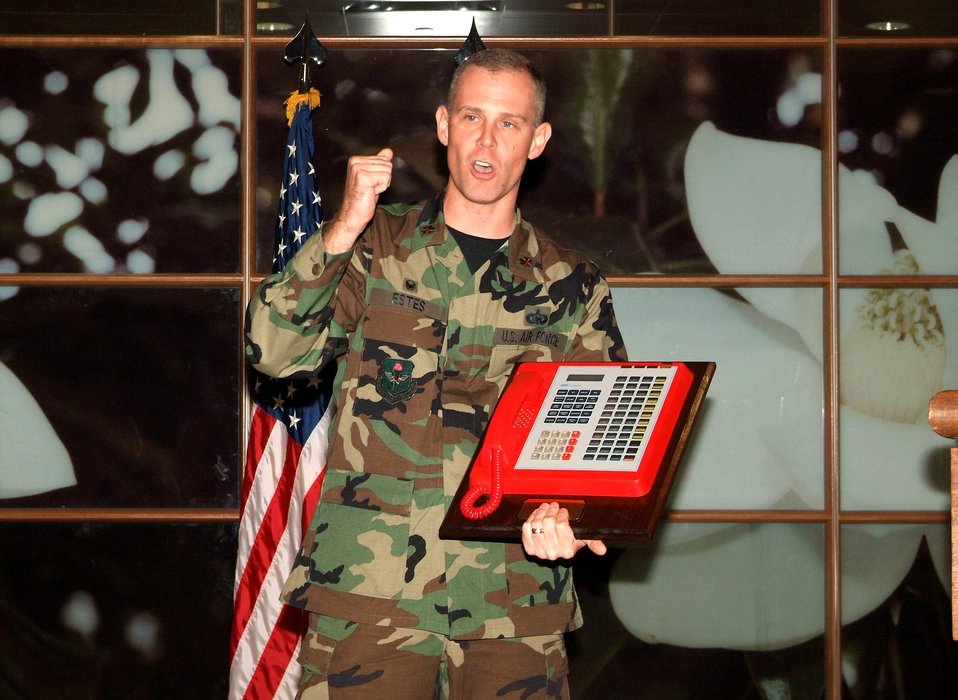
Keesler, industry set new Air Force standard for telephone service

Maj. Alan Estes explains how the Voice Over Internet Protocol telephone system began with the famous red phones and the need to communicate securely. Major Estes is assigned to the 81st Communications Squadron at Keesler Air Force Base, Miss.